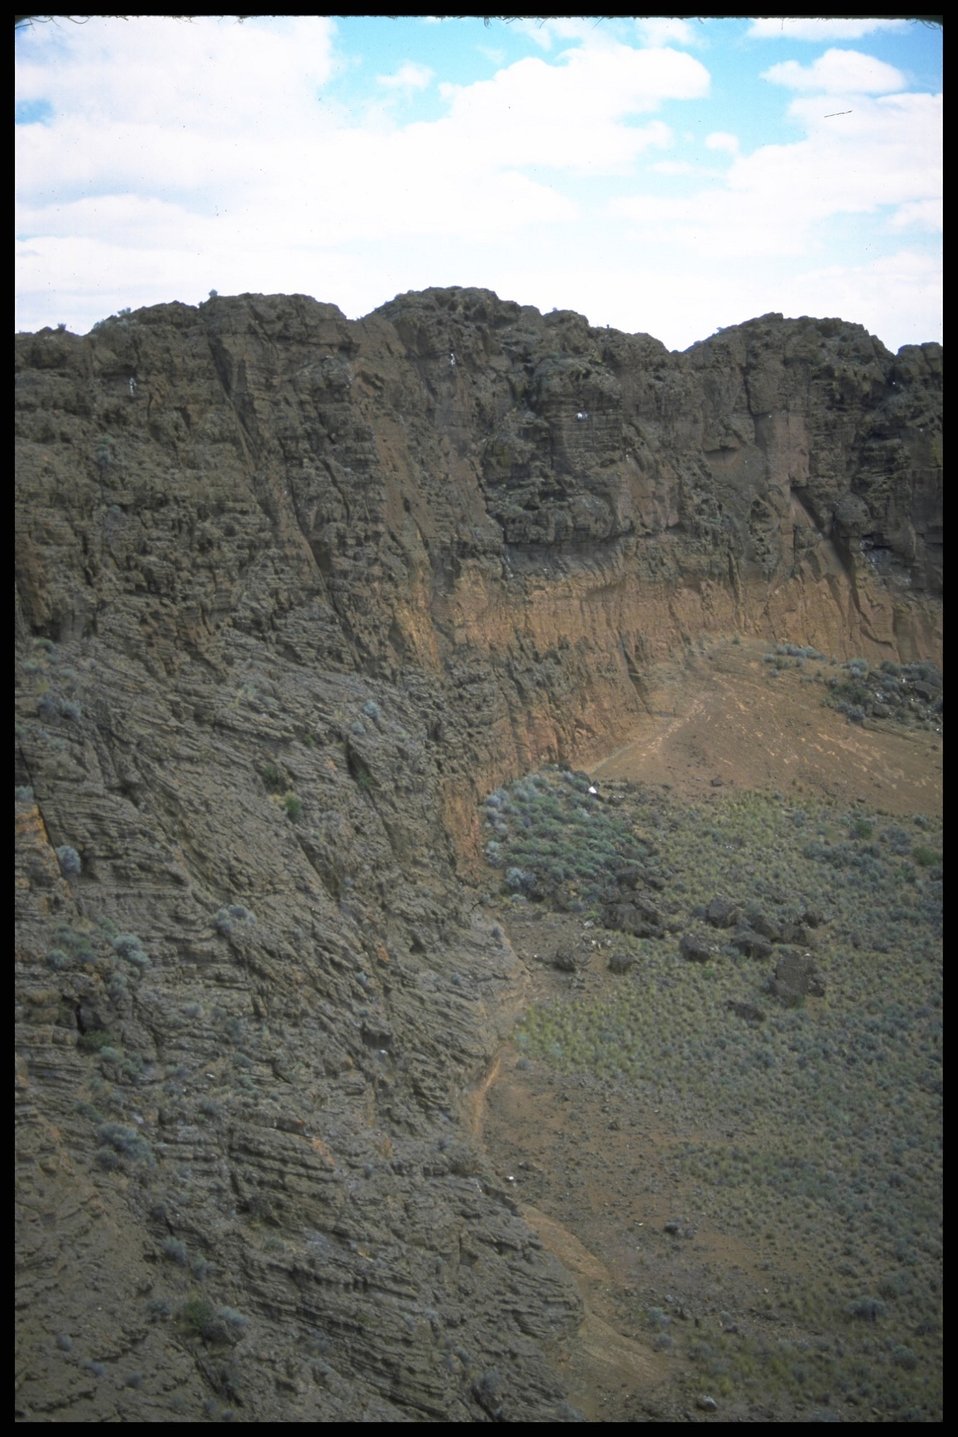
Ft. Rock from above, Lakeview District.